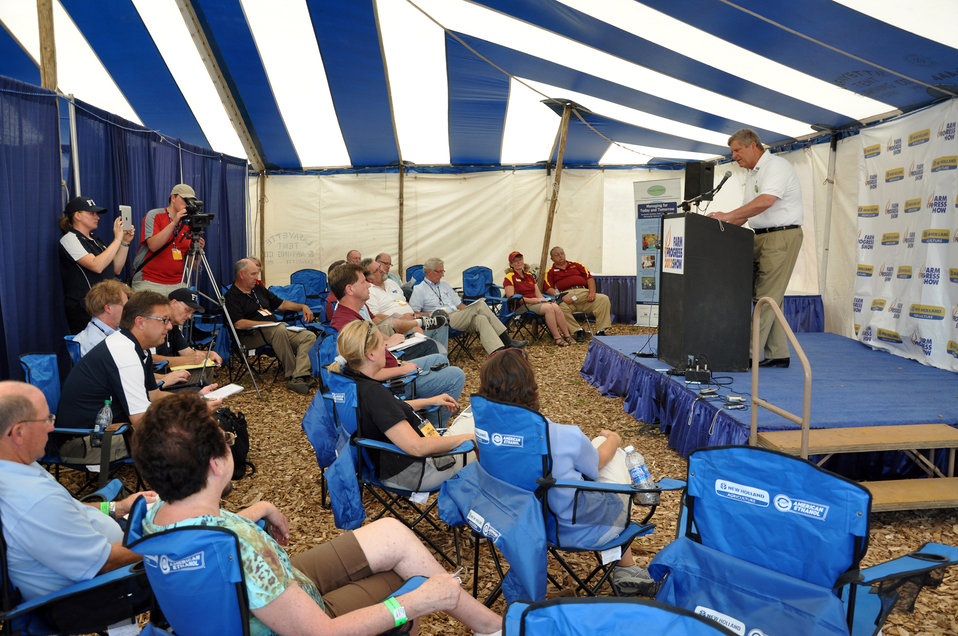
Agriculture Secretary Tom Vilsack visits with the media during the 2012 Farm Progress Show in Boone, Iowa, on Aug. 30, 2012. Vilsack announced new USDA grants for Beginning, Socially Disadvantage Farmers, and Historically Underserved Farmers.